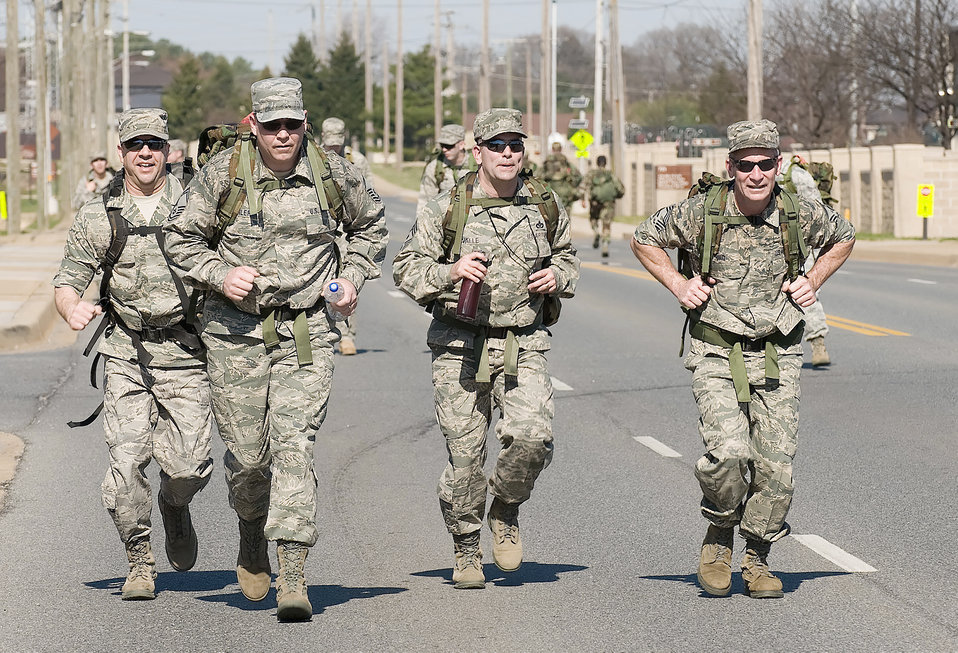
Airmen participate in ruck march

Chief Master Sgt. David Fish (left), and Senior Master Sgt. James Segler (second from left) join other senior NCO's during the 436th Security Forces Squadron's 11th Annual Ruck March held March 20, 2010, at Dover Air Force Base, Del. The annual 6.2-mile march is a fundraiser to honor the veterans of the Korean War who fought in the Battle of the Chosin Reservoir. Chief Fish is the Air Force Mortuary Affairs Operations Center enlisted manager, and Sergeant Segler is the AFMAO superintendent.